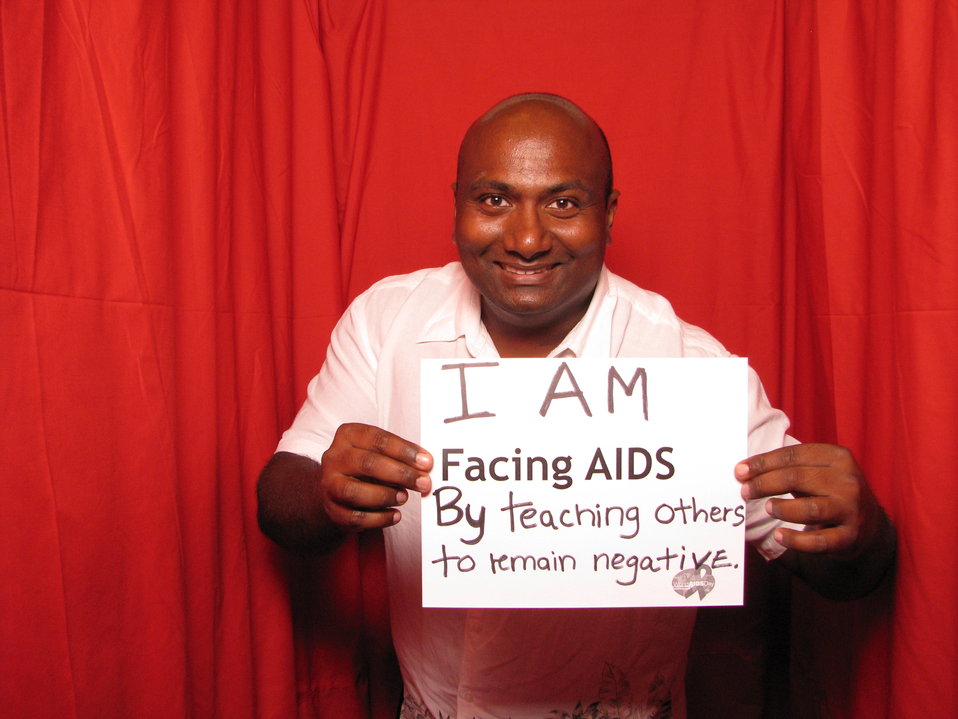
I AM FACING AIDS by teaching others to remain negative.

From the AIDS.gov photo booth at the U.S. Conference on AIDS, September 2010 (Orlando, FL).